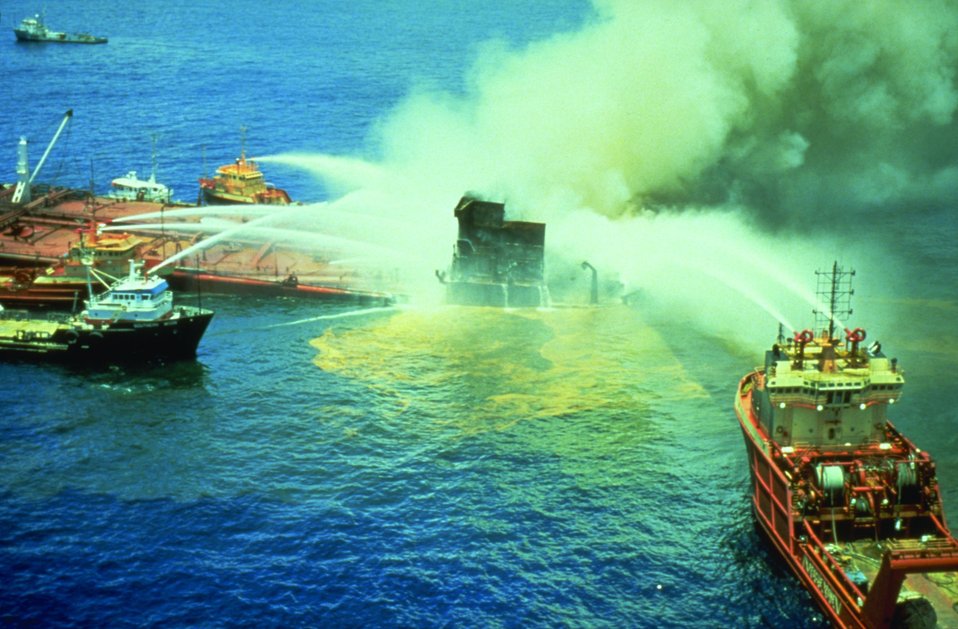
Ixtoc I oil spill. This spill was caused by a blownout oil well. The well ran wild for 9 months and spilled over 140 million gallons of oil into the Bay of Campeche.